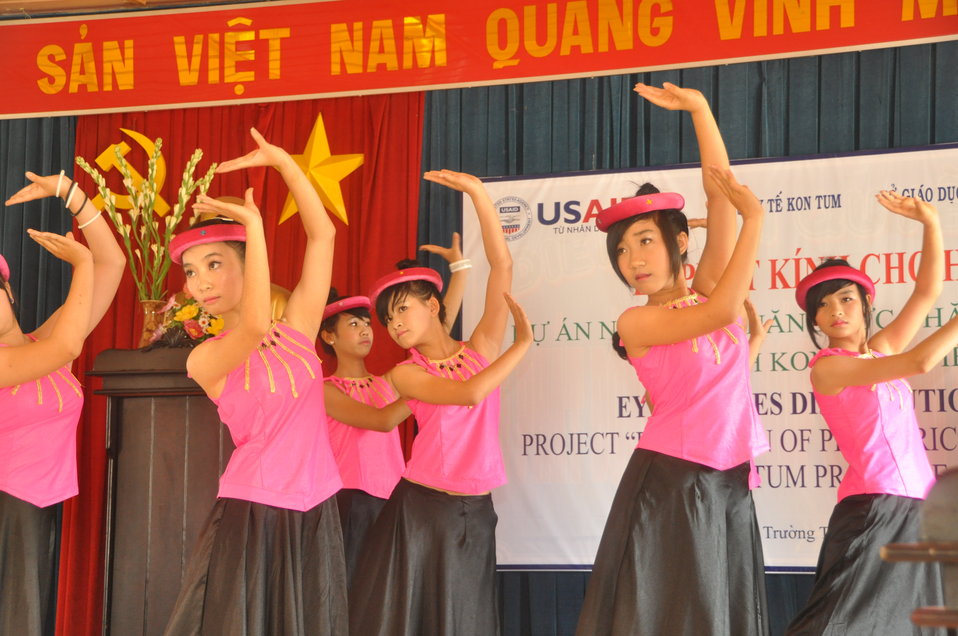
School children in Dak To, Kon Tum Province, receive eyeglasses under a program supported by USAID and partners HKI and World Learning